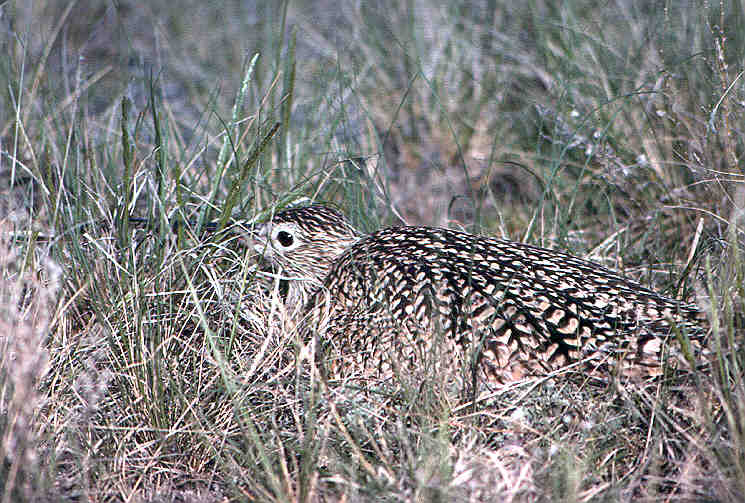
Long-billed curlew on nest, Bowdoin WMD